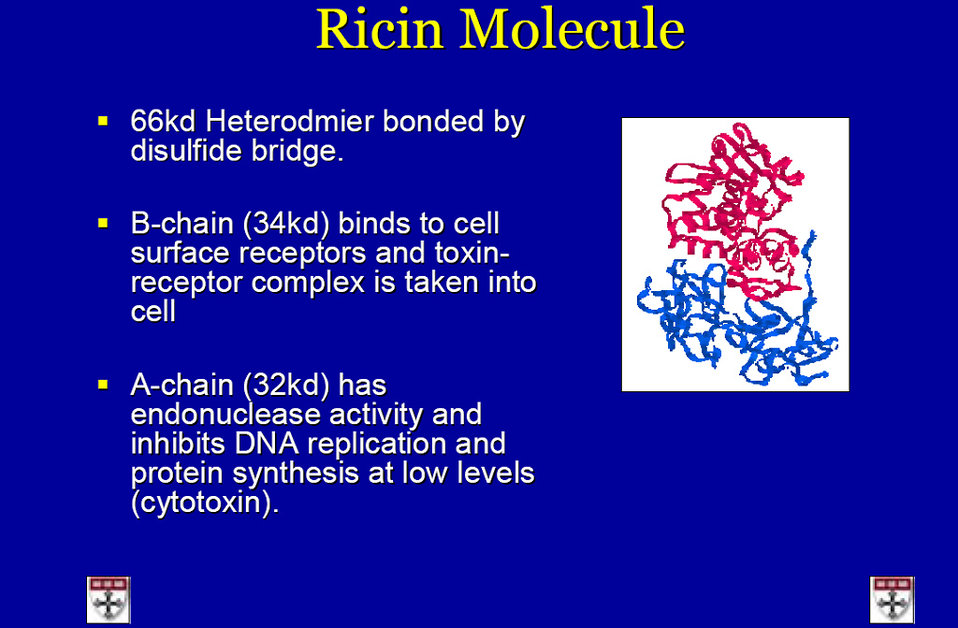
This presentation highlights the history, chemistry, and uses of ricin, a highly toxic poison made from castor beans.